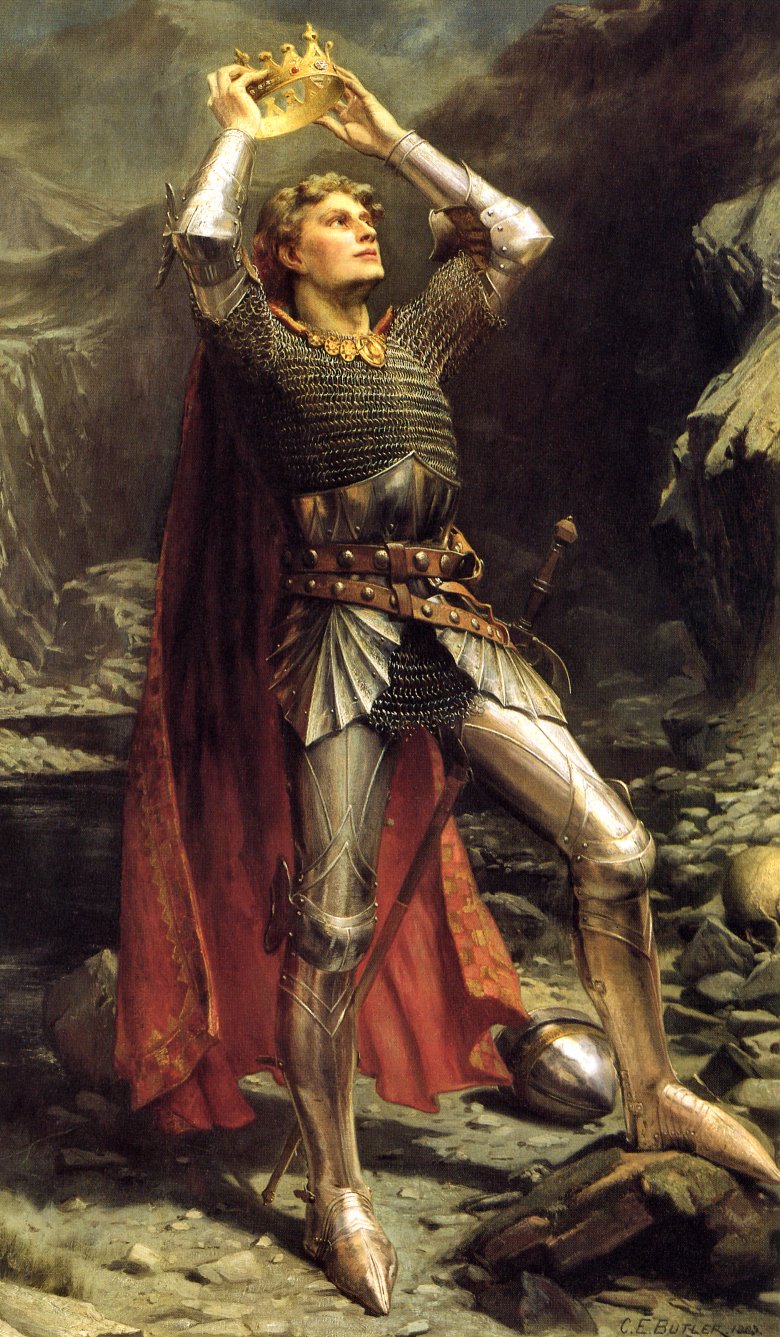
Arthurian knight